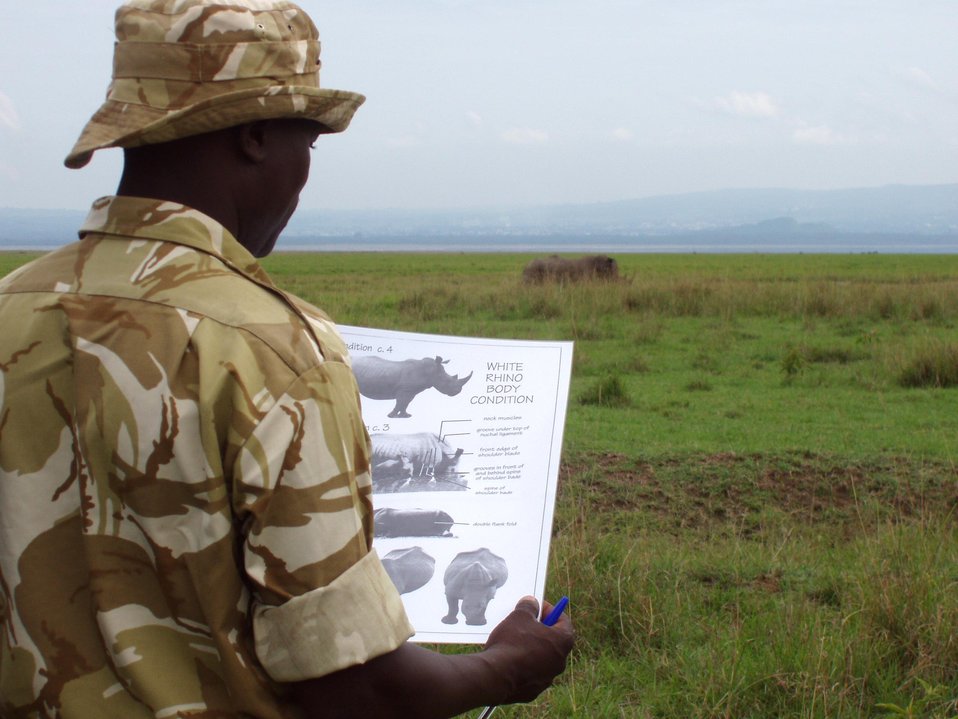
White rhino monitoring

Nakuru National Park, Kenya